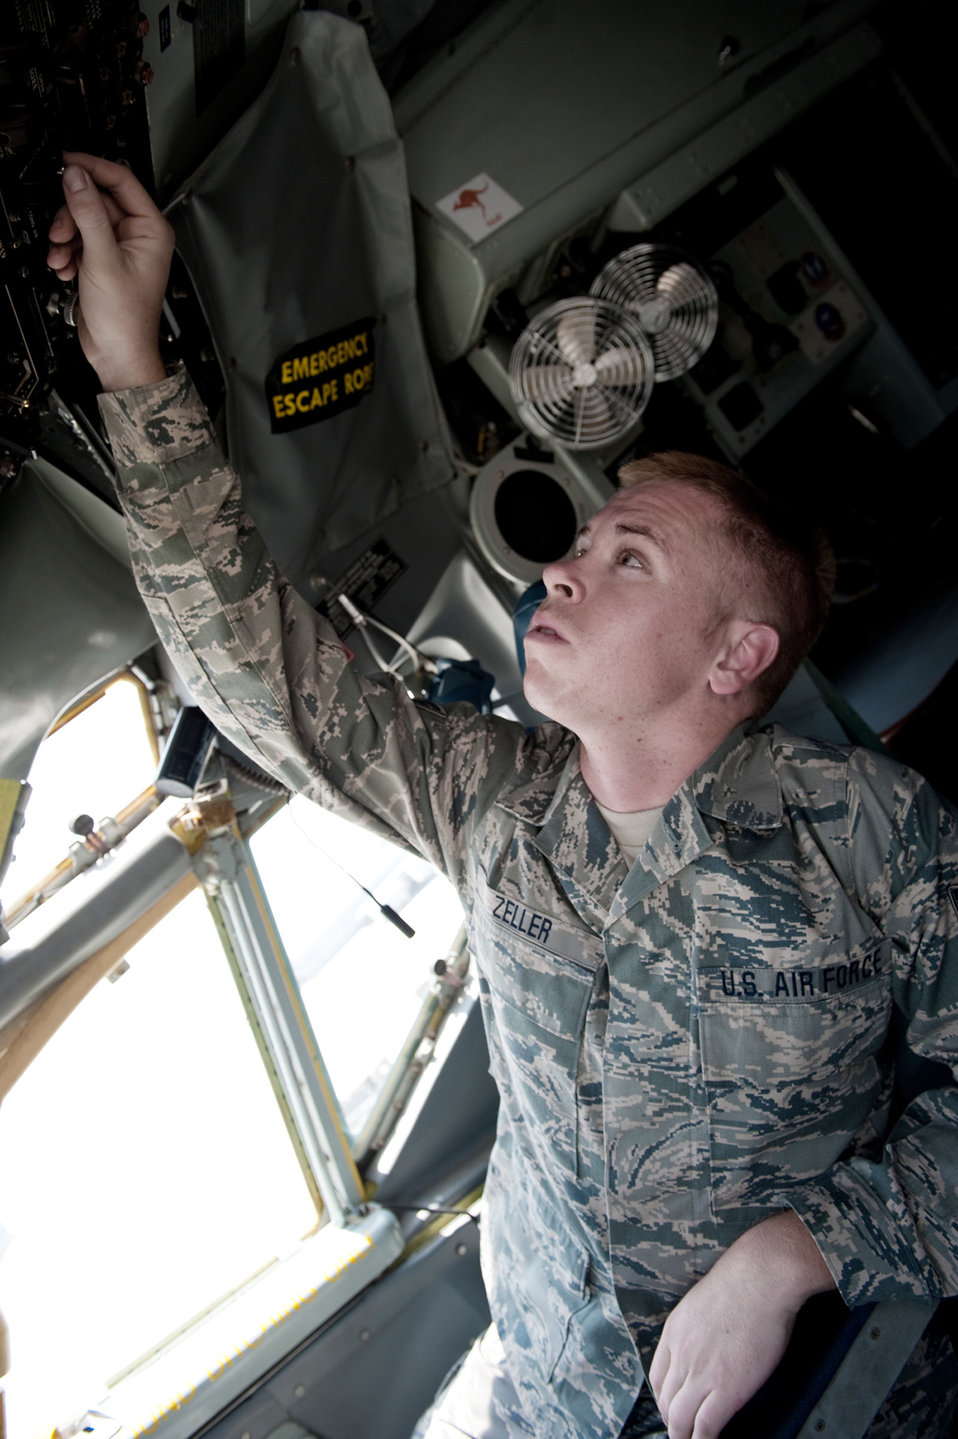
Teamwork keeps tankers flying

Senior Airman Ryne Zeller performs a preflight check to ensure a KC-135 Stratotanker is safe to fly Aug. 11 at an air base in Southwest Asia. The KC-135 provides aerial refueling support to Air Force, Navy and Marine Corps and allied nation aircraft. Airman Zeller is a 340th Aircraft Maintenance Unit aircraft electrical environmental systems technician. He is a native of Chandler, Ariz., and is deployed from the Arizona Air National Guard.